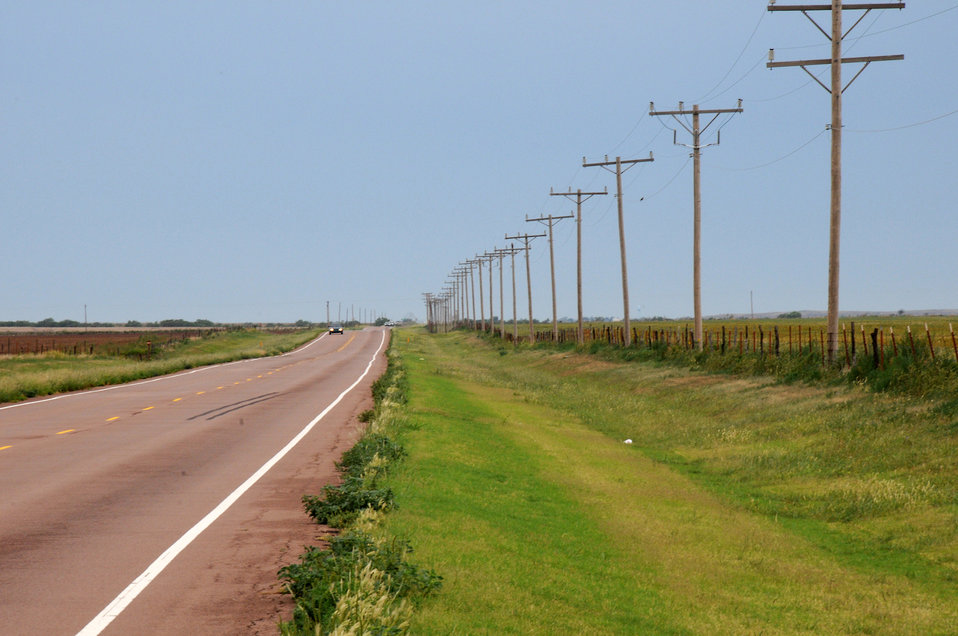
A rural highway in Oklahoma lined with telephone poles on August 13, 2009.